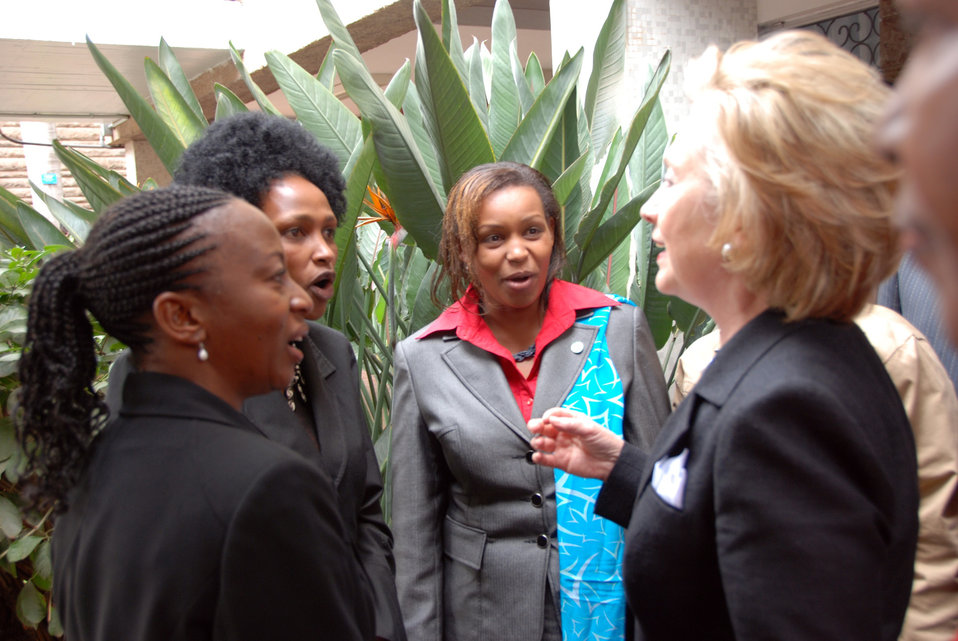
Secretary Clinton Visits Nairobi University

U.S. Secretary of State Hillary Rodham Clinton speaks with a group of women at the University of Nairobi in Nairobi, Kenya August 6, 2009.